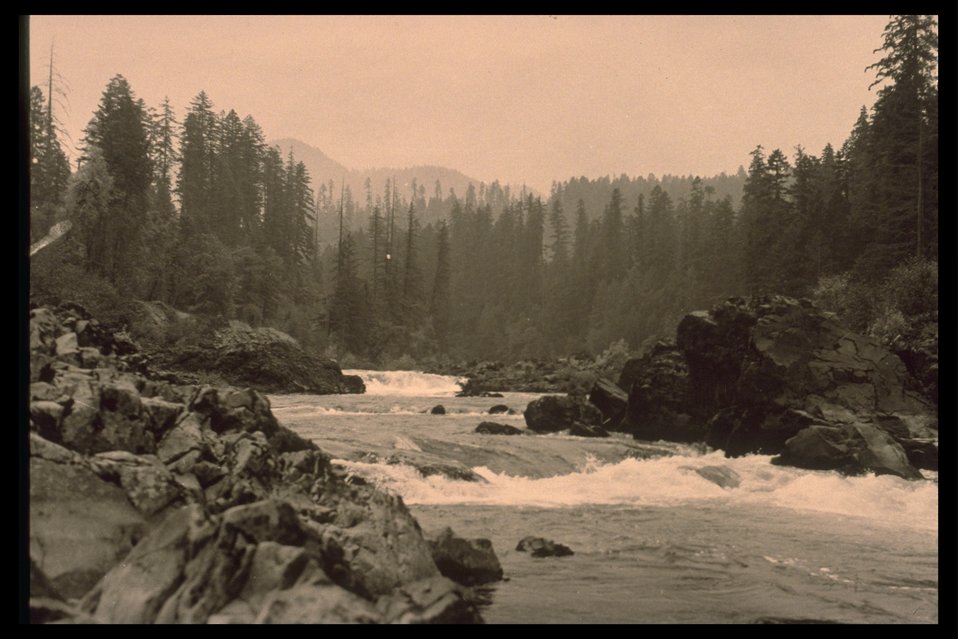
Black and White Photo of a river in the O & C forest.